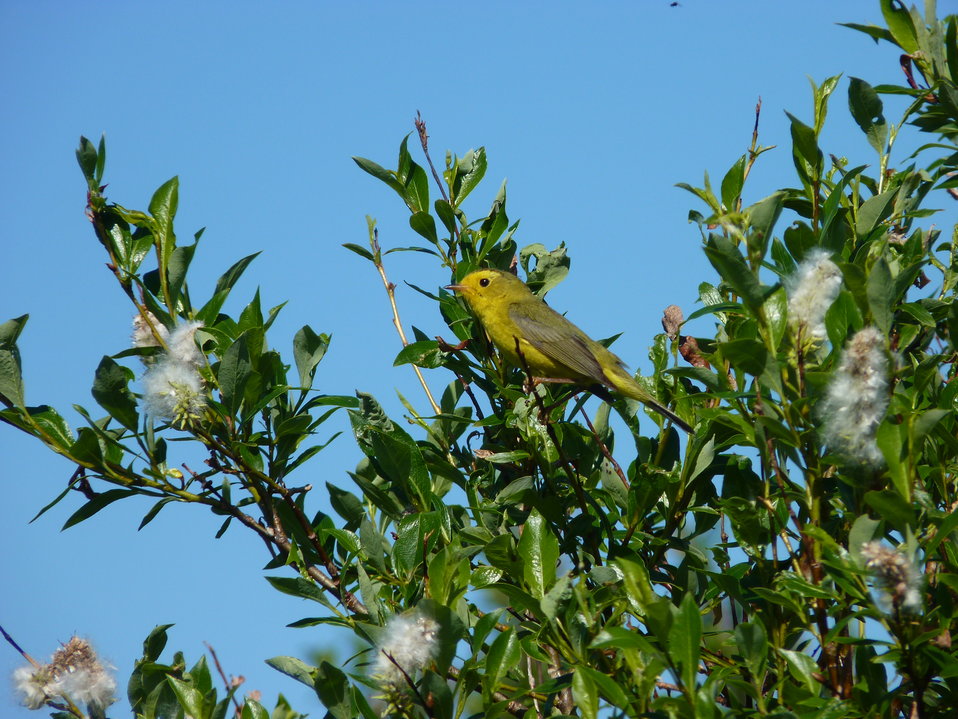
Wilson's warbler

Andreafsky wilderness, Yukon Delta National Wildlife Refuge